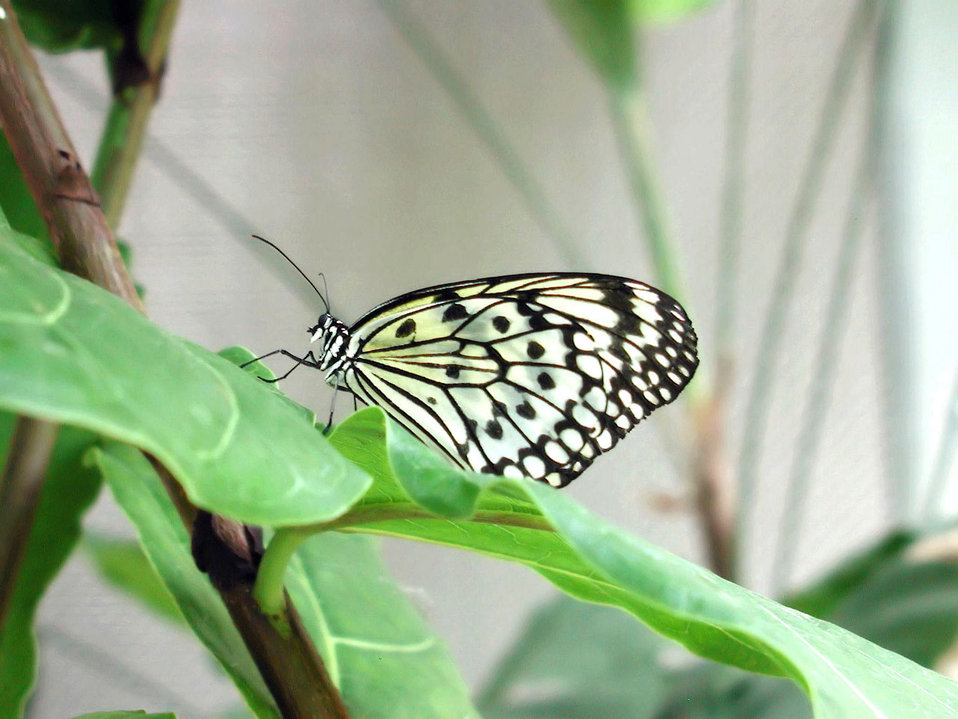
Butterfly

Close up of butterfly on leaf.